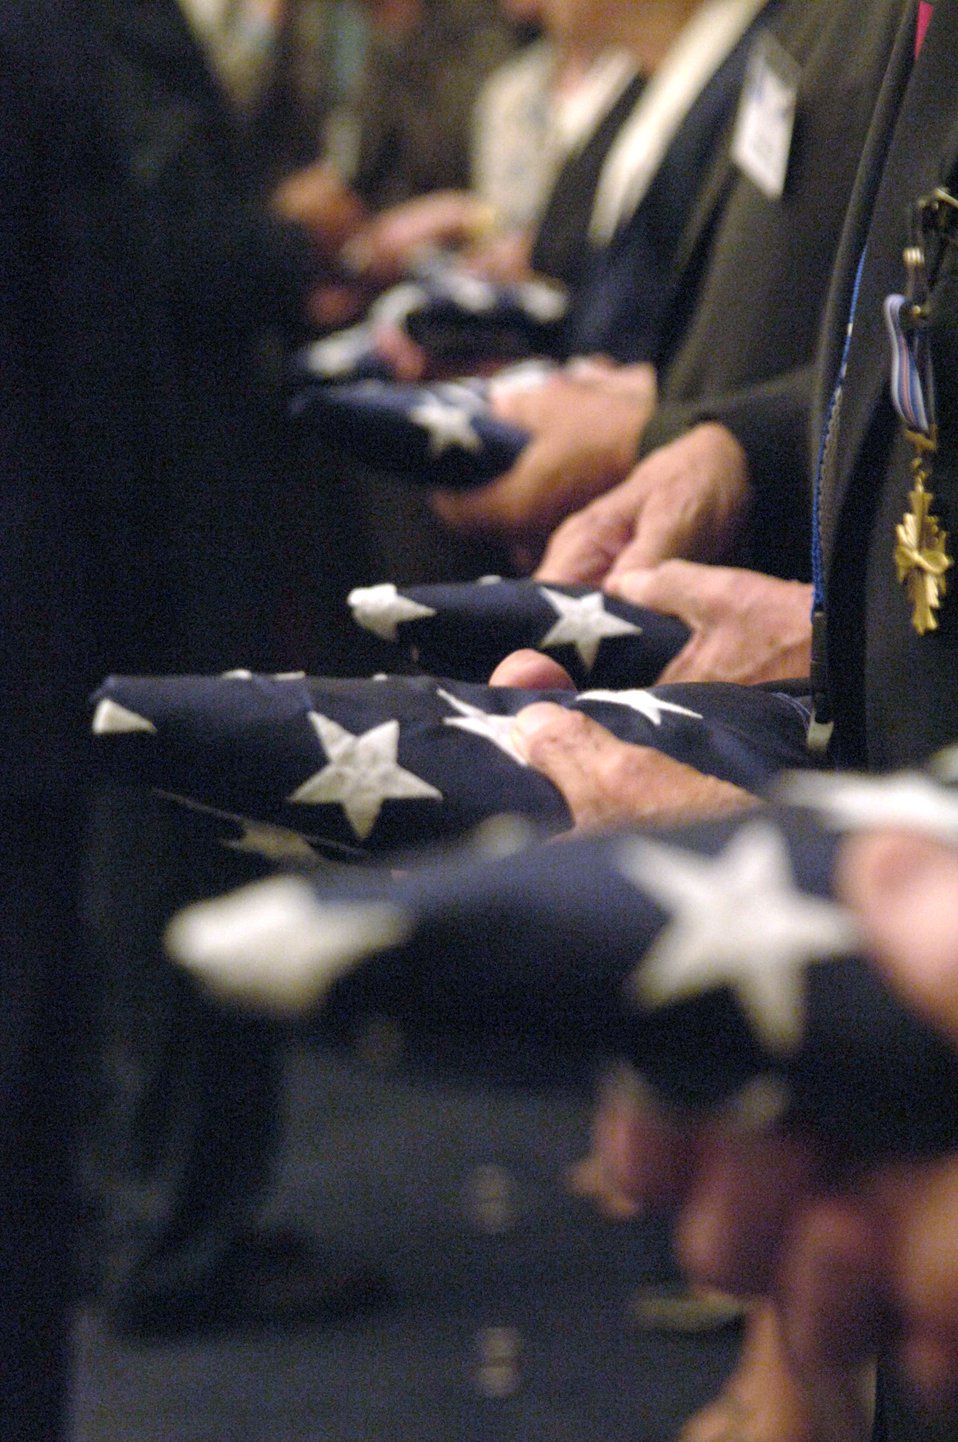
WWII bomber crew awarded Distinguished Flying Cross

American flags flown over the U.S. Capitol were presented to surviving members of the